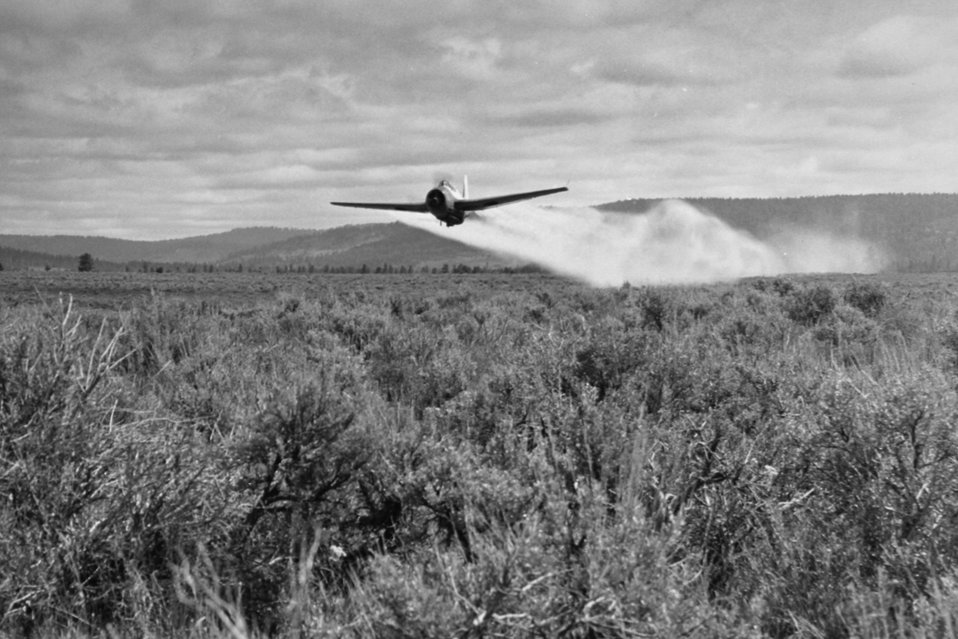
District Manger BLM 74 South Alvord Ave. Burns Oregon 97720 Hay Creek Brush Sraying 1957